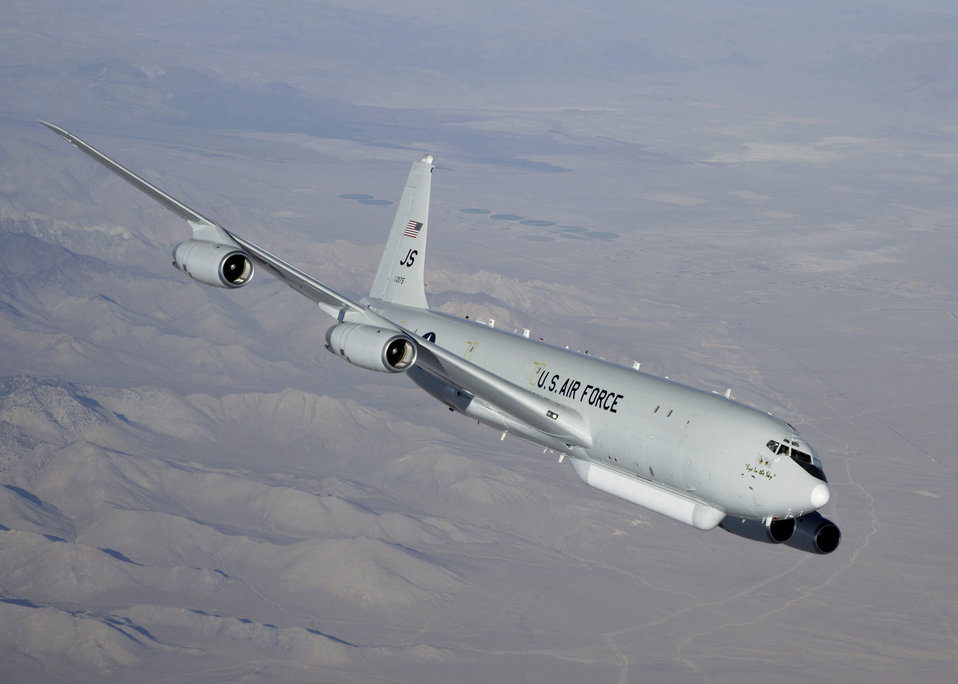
JSTARS

An Electronic Systems Center team working with an E-8C Joint Surveillance Target Attack Radar System has been participating in the Joint Surface Warfare Joint Capability Technology Demonstration.